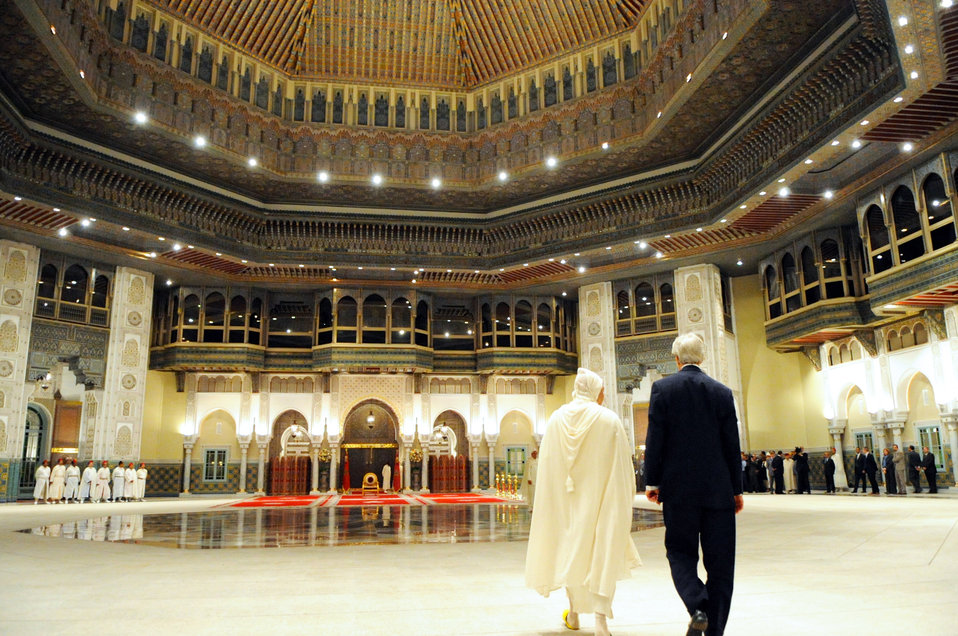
Secretary Kerry Walks Through the Royal Palace Before Meeting King Muhammed VI

U.S. Secretary of State John Kerry, escorted by a Protocol official, walks through the Royal Palace before a meeting with King Muhammed VI in Casablanca on April 4, 2014.